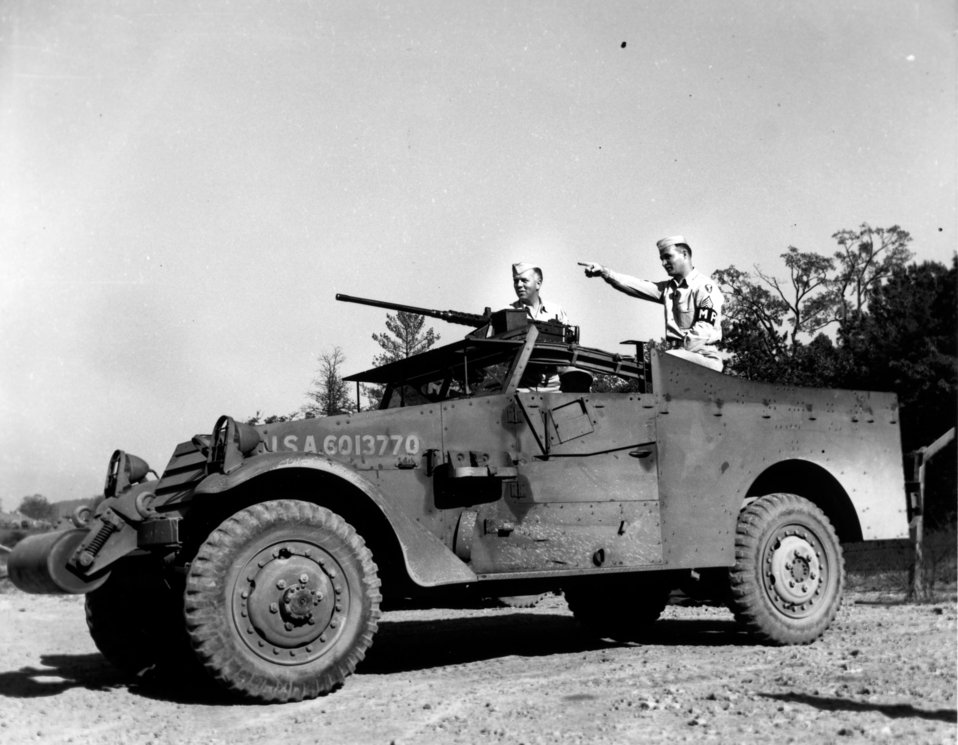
Army Activity at Oak Ridge